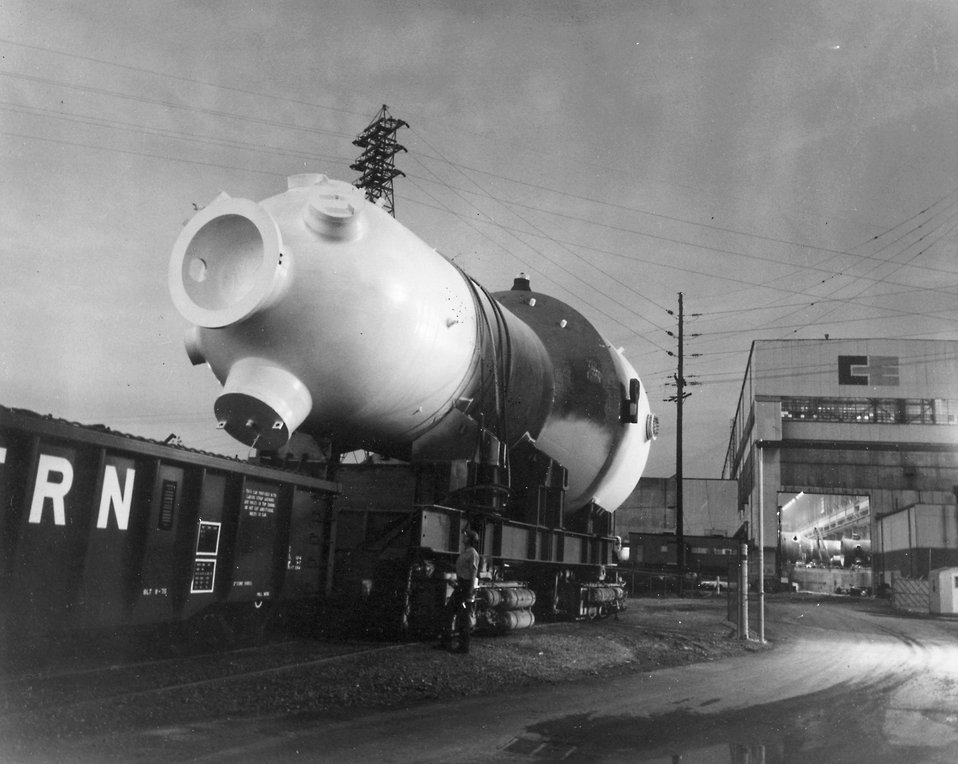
A 623-ton 65-foot nuclear steam generator leaves Combustion Engineering Power Systems in Chattanooga, Tennessee. Circa 1976.